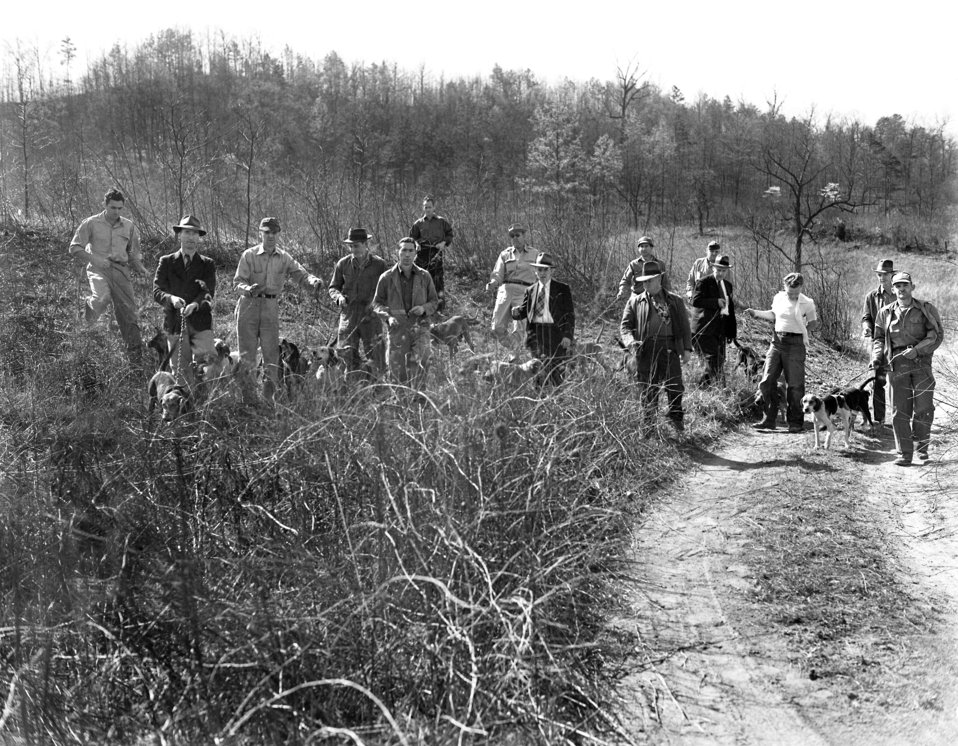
Coon Hunt (Raccoon Hunting) Oak Ridge 1947

3400-6cDOE photo Ed Westcott 4-12-1947 Oak Ridge Tennessee